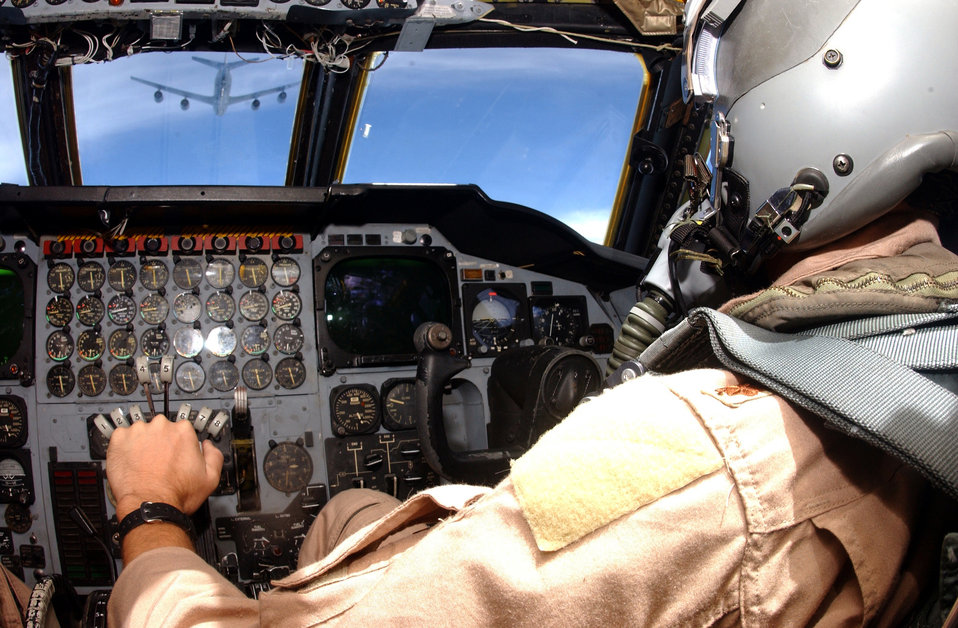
Line 'em up

OPERATION IRAQI FREEDOM -- A 40th Expeditionary Bomb Squadron co-pilot carefully guides his B-52 bomber into position behind a KC-135 during an air refueling mission in support of Operation Iraqi Freedom, April 11. Operation Iraqi Freedom is the multinational coalition effort to liberate the Iraqi people, eliminate Iraqi's weapons of mass destruction, and end the regime of Saddam Hussein.